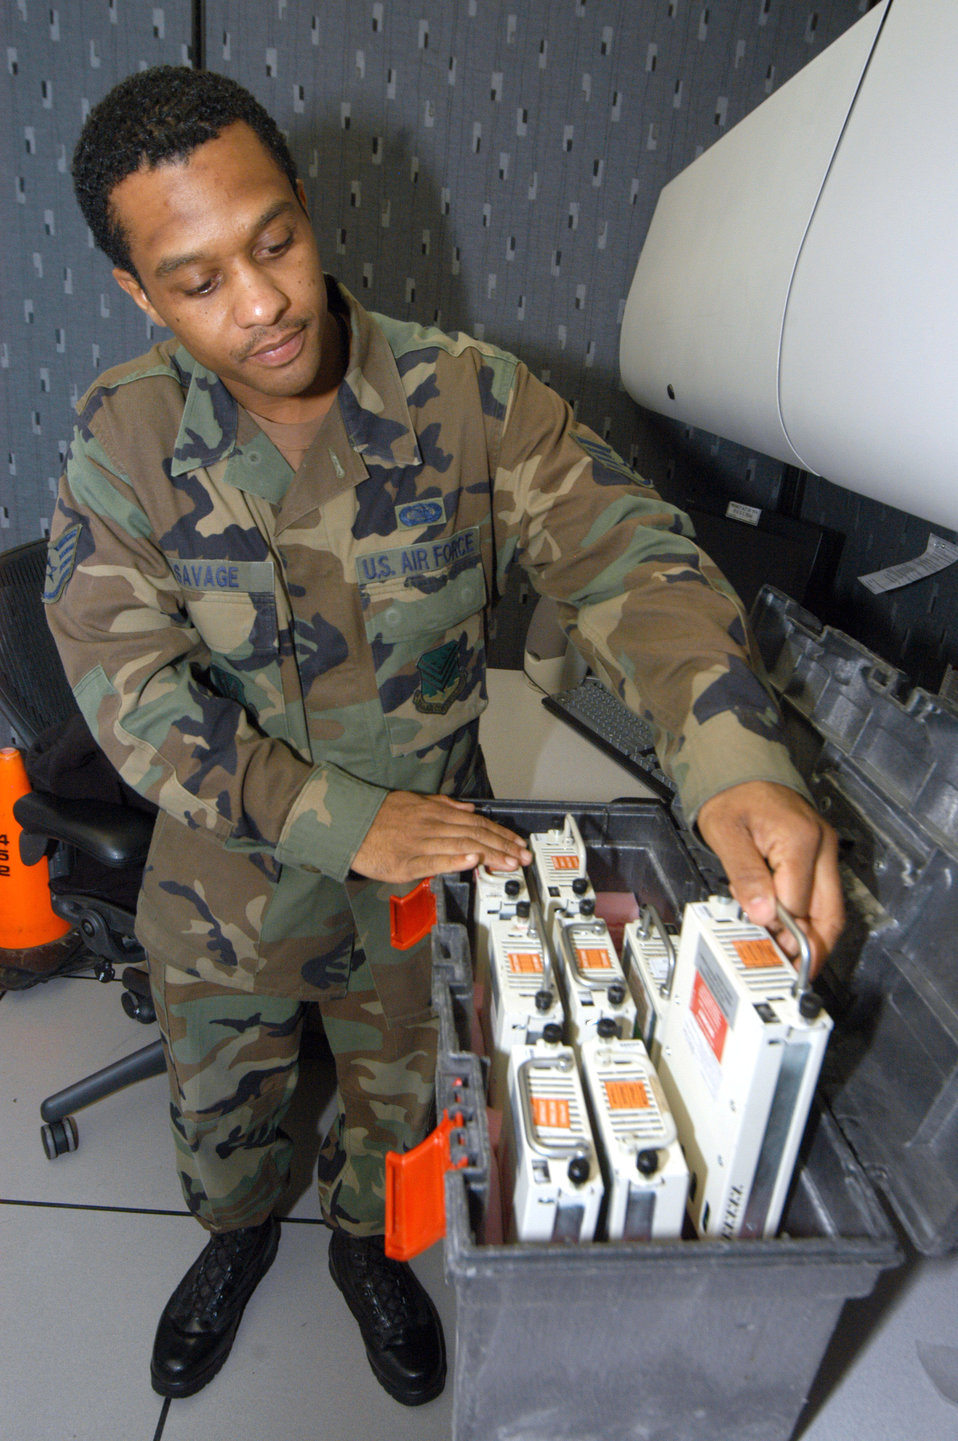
Software maintainers help warfighters achieve mission

Staff Sgt. Chinua Savage places a backup disk in a launch kit for an E-8 Joint Surveillance Target Attack Radar System aircraft. The backups will be used for any disks that need to be replaced on an aircraft before it launches. Sergeant Savage is assisgned to the 116th Computer Systems Squadron.